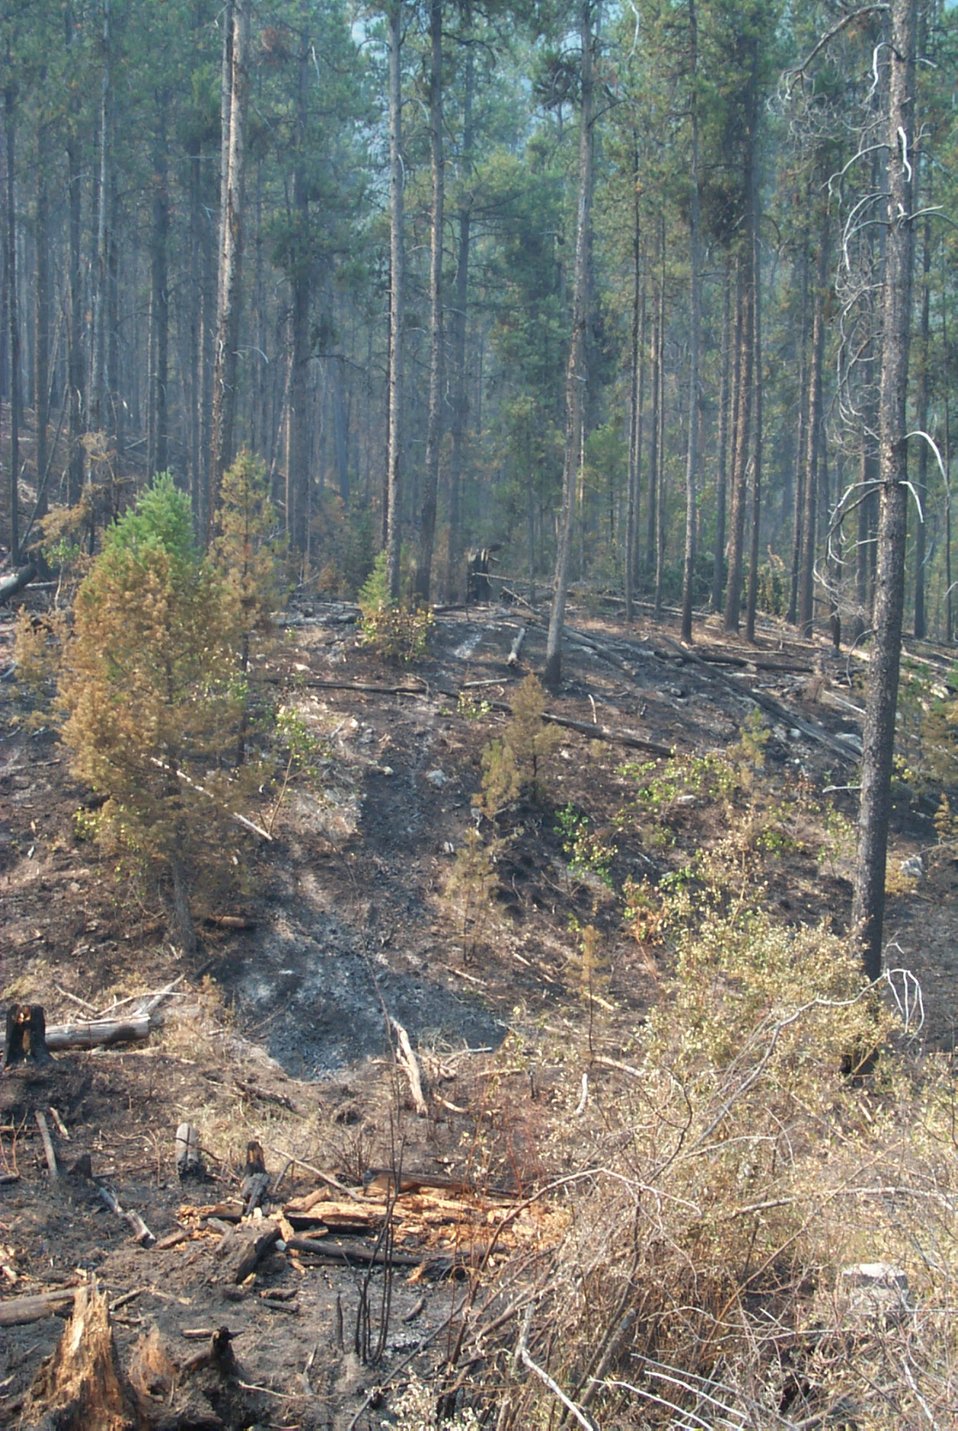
Fire Clearwater Fire Salmon Field Office USRD Upper Snake River District